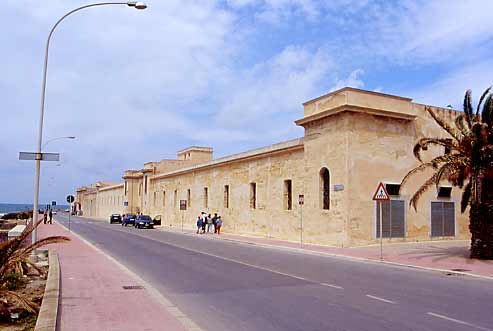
Italiano: scattata da me